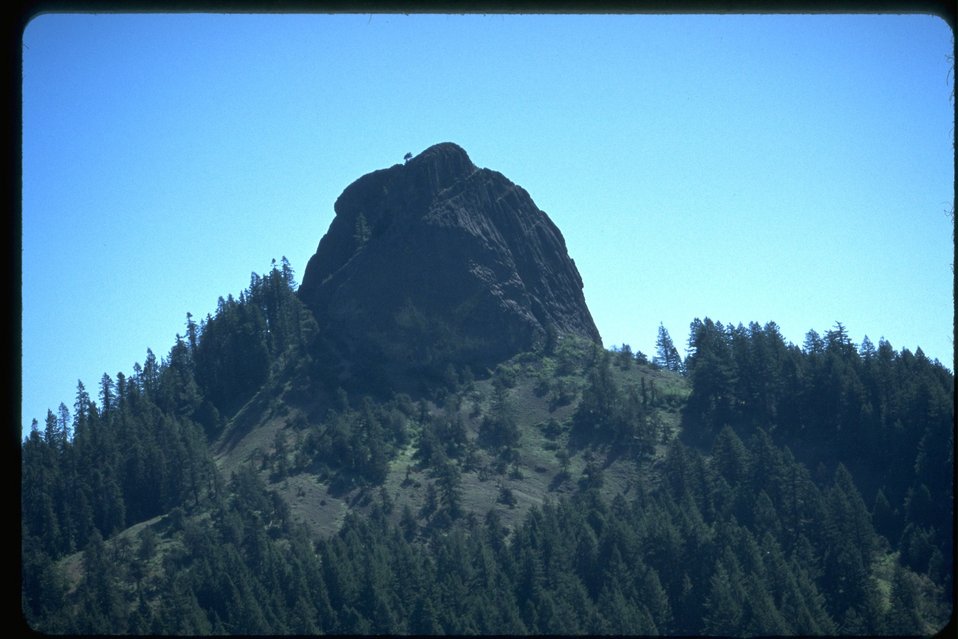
Pilot Rock from wildflower meadow Cascade-Siskiyou National Monument (CSNM).